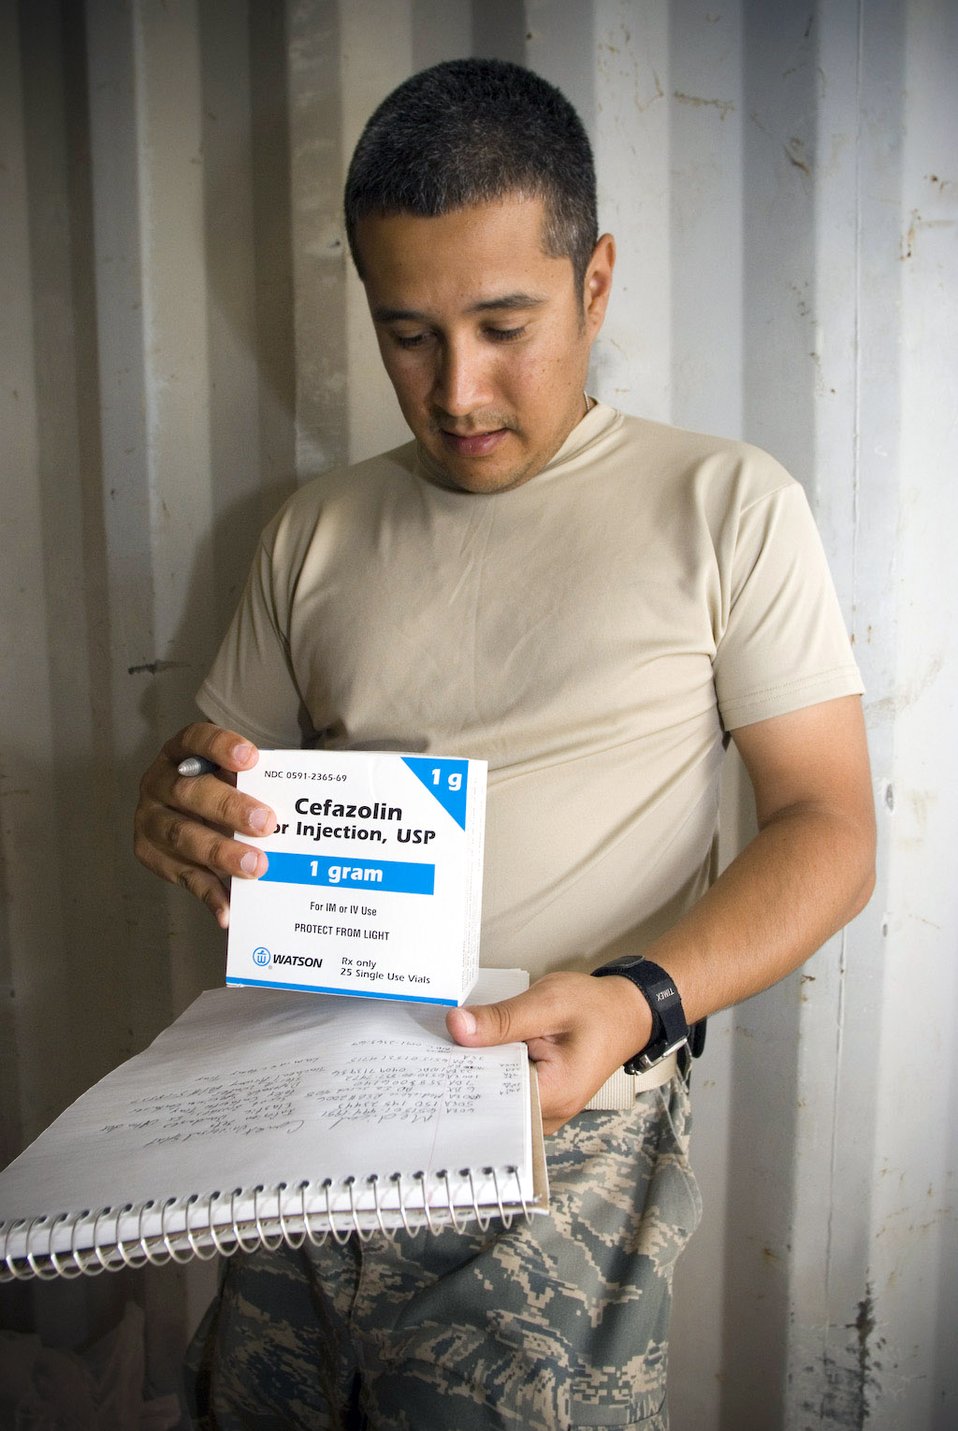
Mobile readiness team supports Army in Iraq

Tech. Sgt. Richard Carditl records the product name, quantity and national stock number of the items inside a container express Oct. 19 at Camp Corregidor, Iraq. Serviceable assets recovered from the container express are inventoried and redistributed to Army units throughout Iraq. Airmen of various career fields augment the Army in nontraditional